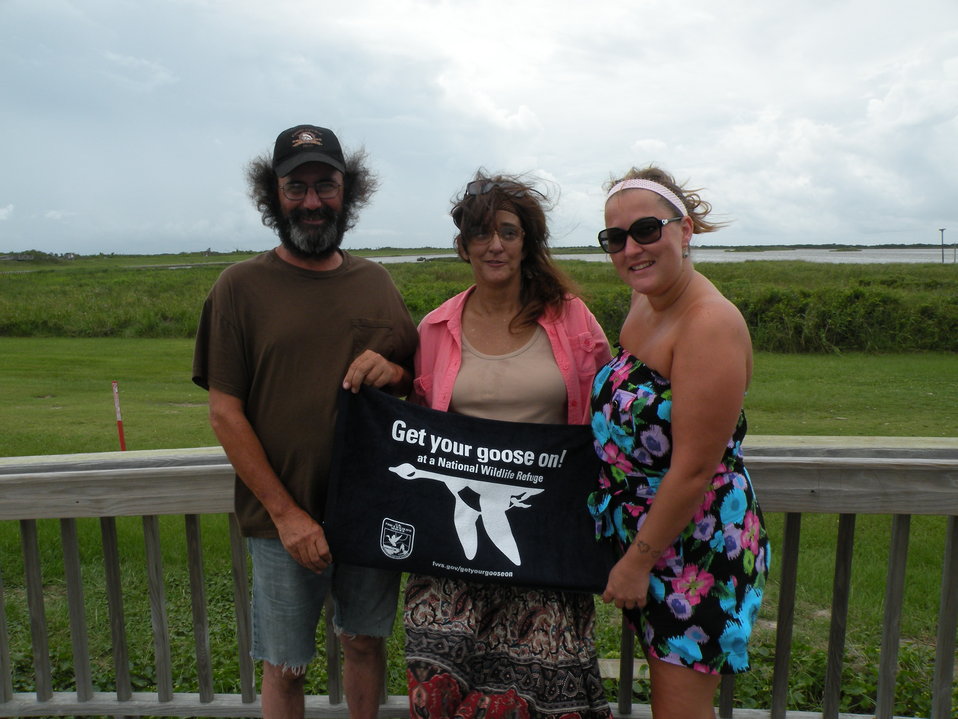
Get Your Goose On!

Visitors at PINWR enjoying the refuge stop to Get Their Goose On!

Ashlyn Knight/USFWS